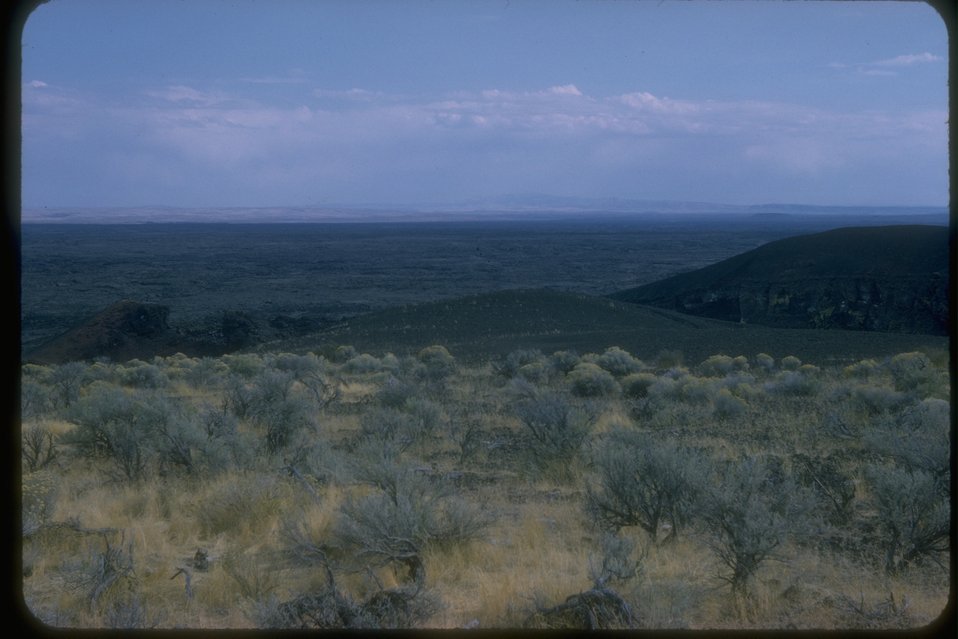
View of the Jordan Craters.